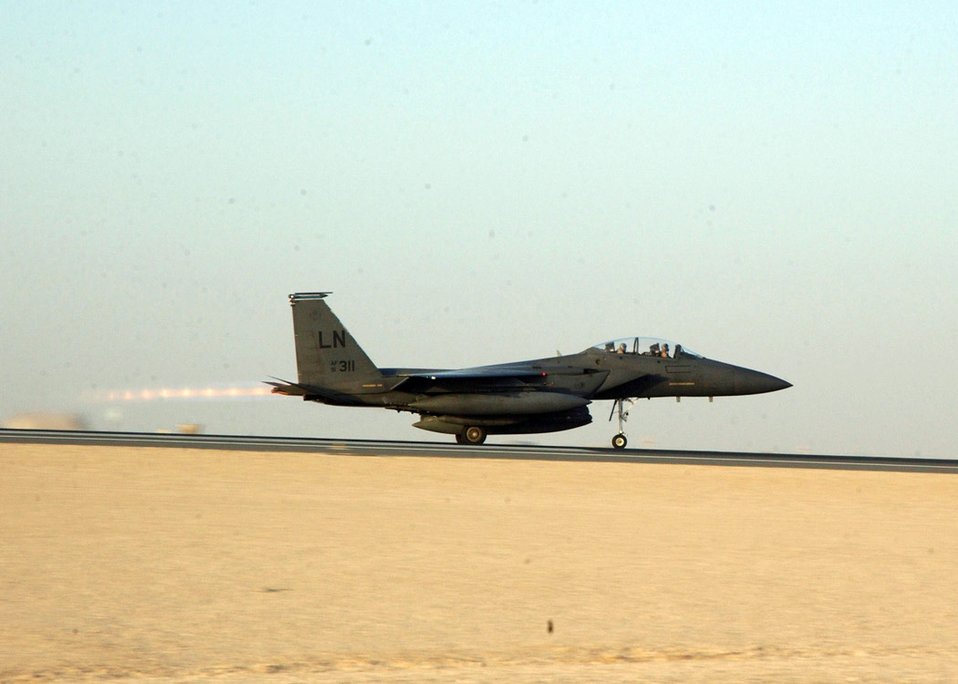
Deployed fighters

SOUTHWEST ASIA (AFPN) -- The first of many F-15E Strike Eagles deployed from Royal Air Force Lakenheath, England, takes off Jan. 25 and returns to its home station after serving at a deployed location. The Strike Eagles were assigned to the 492nd Expeditionary Fighter Squadron here.